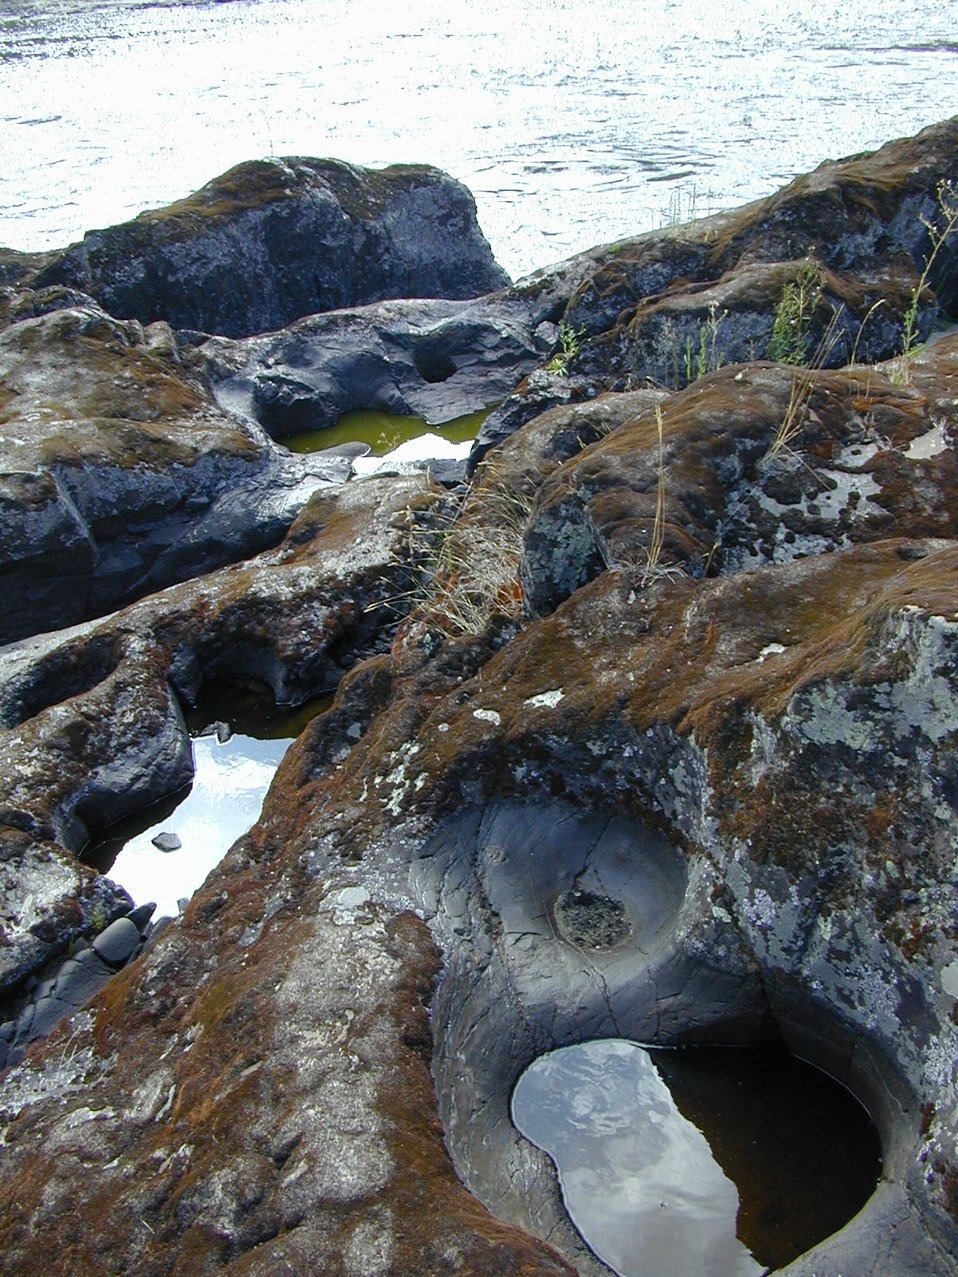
Rock potholes along the Lower Salmon River Cottonwood Field Office UCSC Upper Columbia Salmon Clearwater District